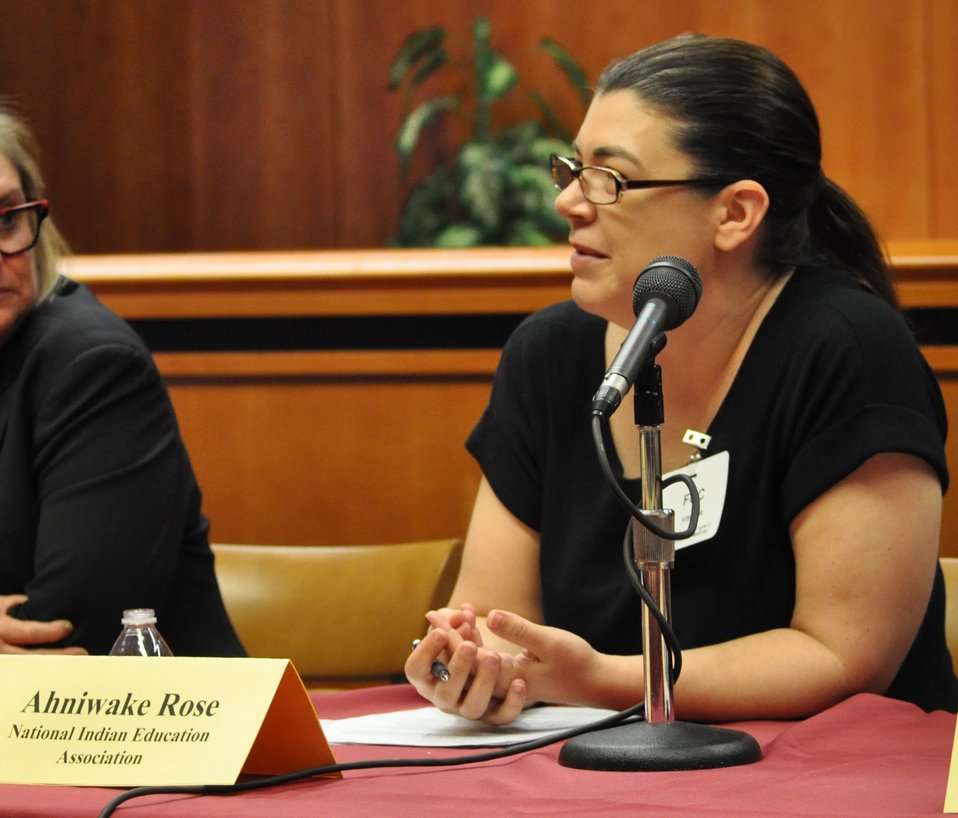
5.6.2014 E-Rate Modernization Workshop

Panel Discussion: Expanding Access to Wi-Fi for Schools and Libraries